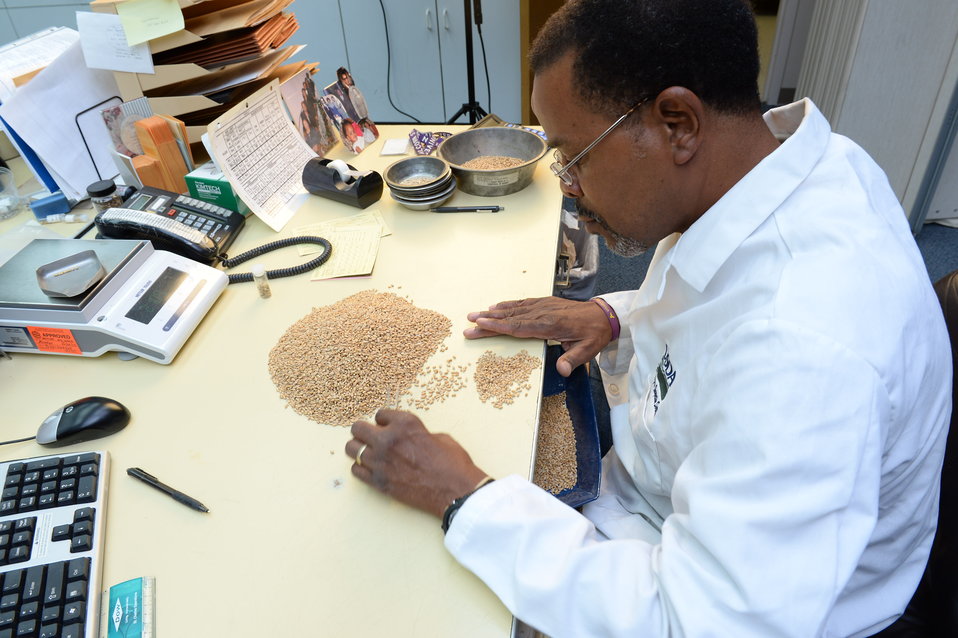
A U.S. Department of Agriculture (USDA) Grain Inspection, Packers and Stockyards Administration (GIPSA) Federal Grain Inspection Service (FGIS) scientist tests wheat at the FGIS inspection laboratory in New Orleans, LA on Monday, Nov. 18, 2013.